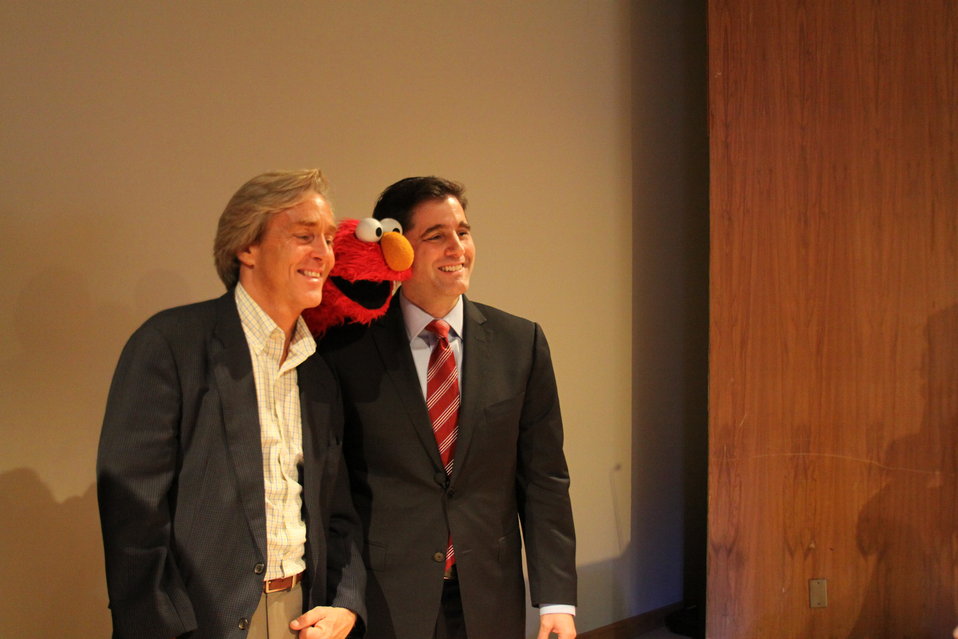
March 12, 2010- Smithsonian Broadband with Elmo